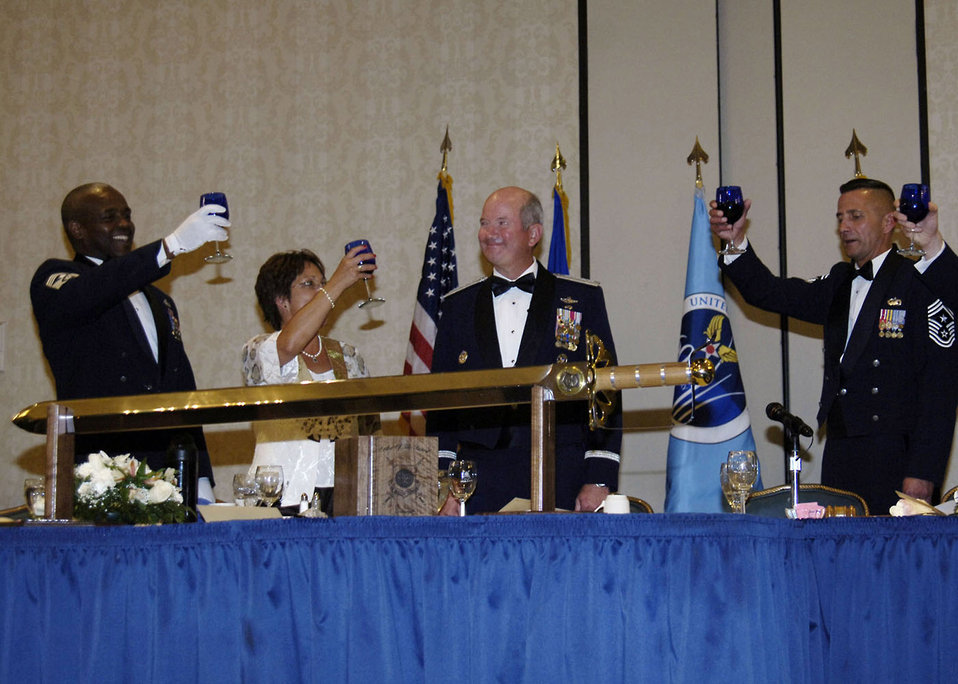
Gen. McNabb inducted into AMC Order of the Sword

Air Mobility Command members toast Gen Duncan J. McNabb at his Order of the Sword ceremony Sept. 6 at Scott Air Force Base, Ill.